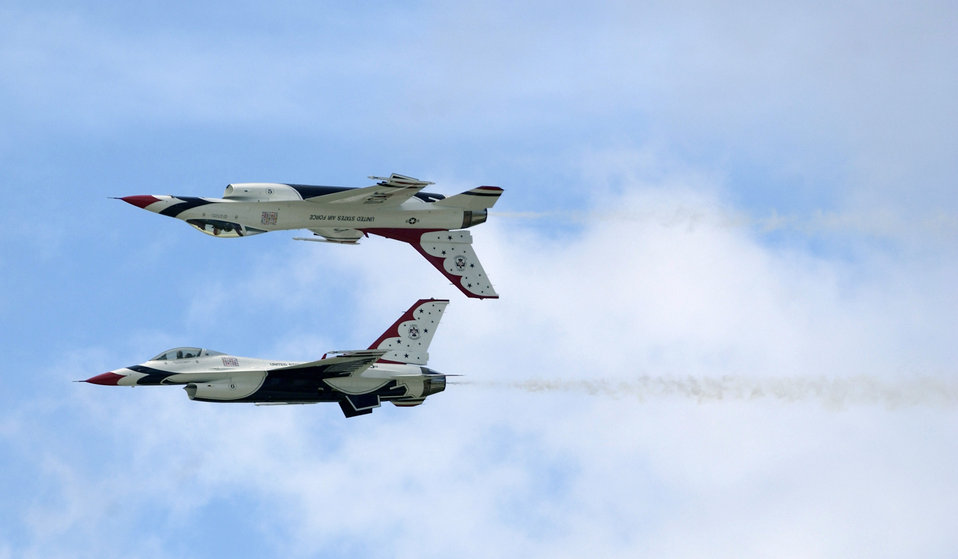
Thunderbirds

ANDERSEN AIR FORCE BASE, Guam -- The United States Air Force Demonstration Team